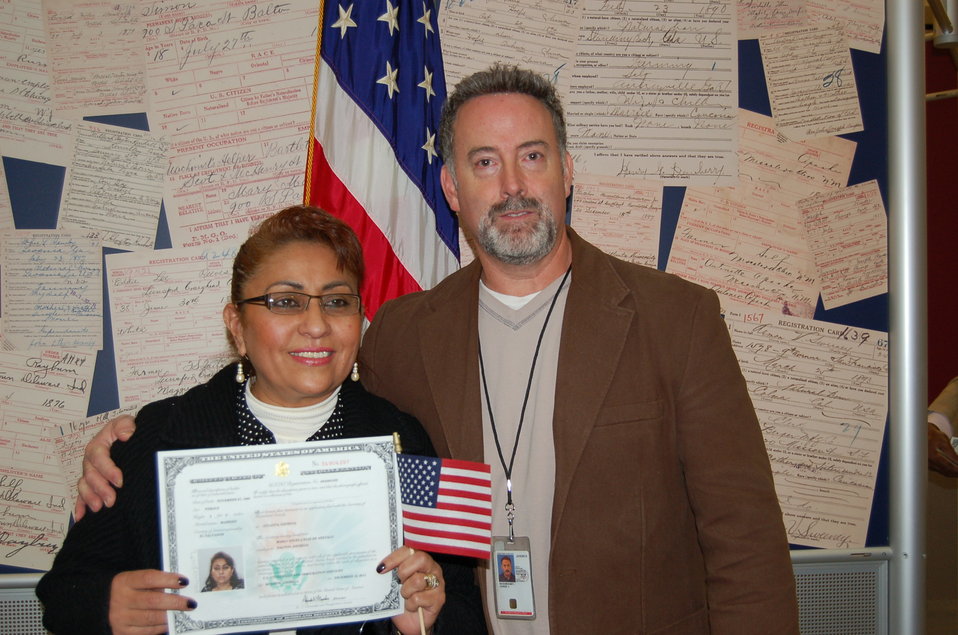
New Citizens